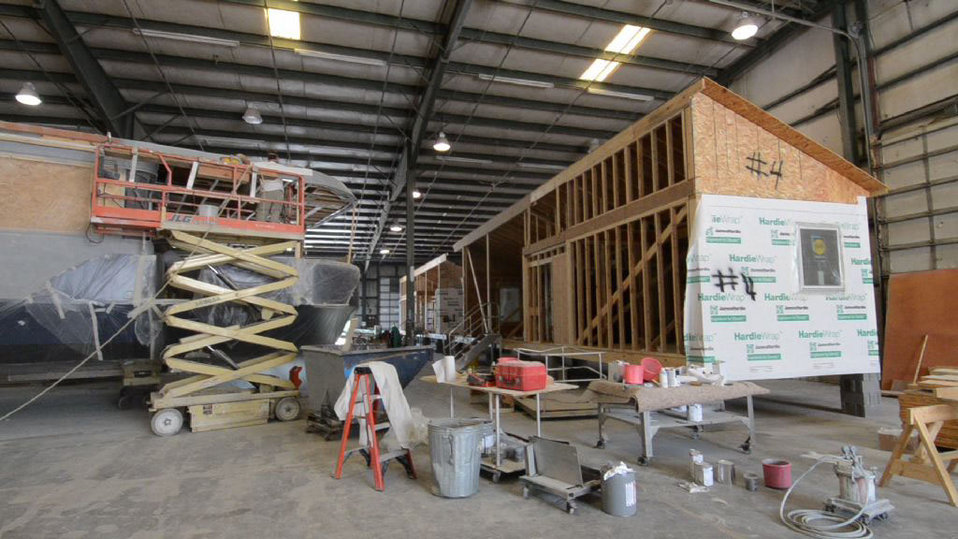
Stardust Industries is helping retool and redirect Kentucky’s houseboat manufacturing industry – which has been decimated because of the struggling economy – by using its facilities and manpower to create low-cost housing that is energy efficient. Rural Development obligated $499,000 in Rural Business Enterprise Grant funds to support this unique endeavor. Up until a few years ago, there were several successful houseboat manufacturers in the four-county area surrounding the city of Somerset. Most have now ceased operation or drastically reduced output, which has led to dramatic, long-term job loss. These new energy efficient homes will be constructed in redesigned, refitted houseboat factories using local workers that have been retrained.